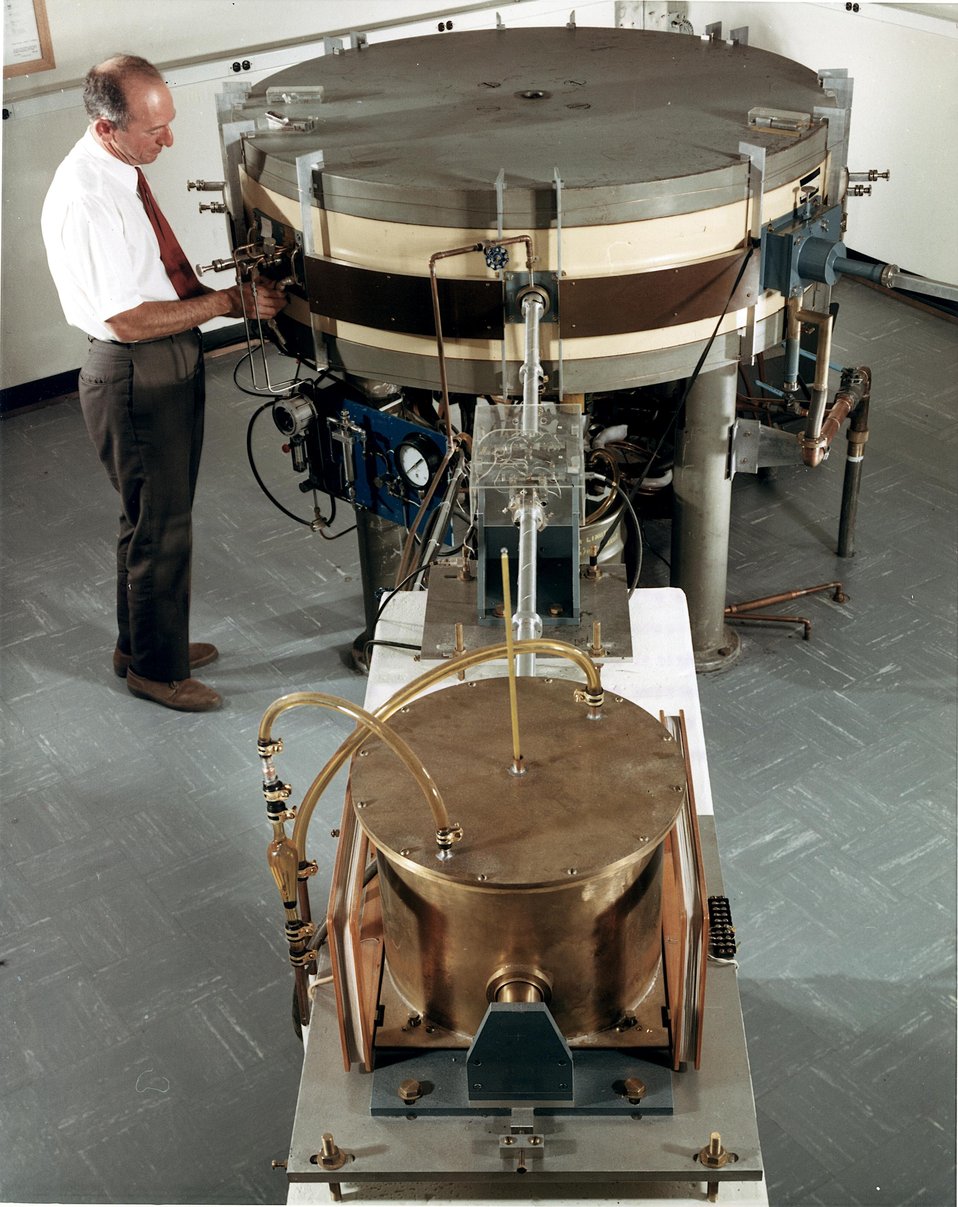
The beta-ray spectrometer shown in this photograph is used for measuring accurately intensities and energies of the monoenergetic groups of elections emitted by many radioactive nuclei. c. 1966